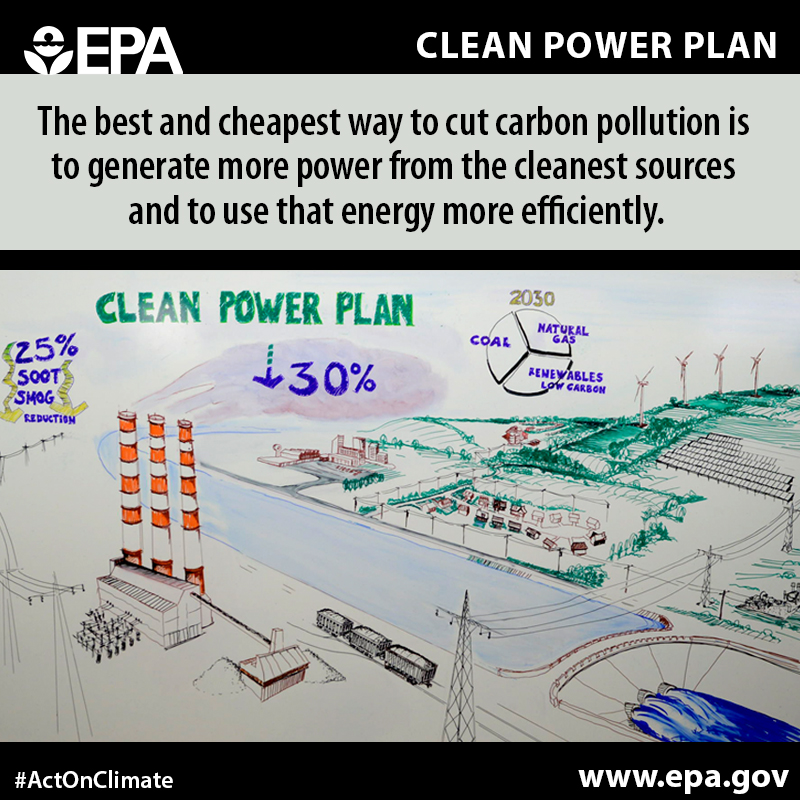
Clean Power Plan

How do we #ActOnClimate to meet the challenge of climate change? Cut carbon pollution by generating power from the cleanest sources and using it more efficiently. www.epa.gov/cleanpowerplan #ActOnClimate